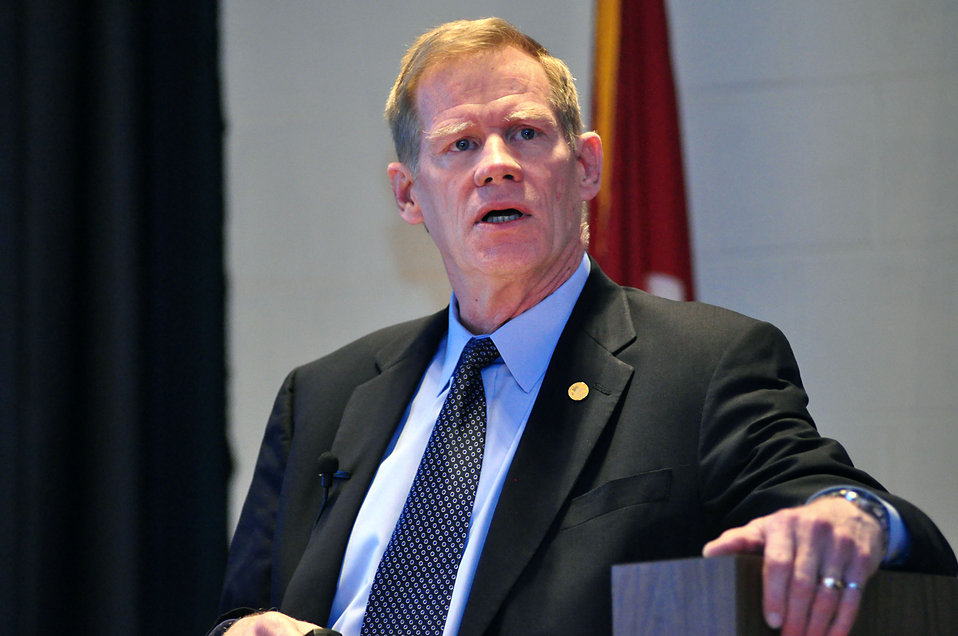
Project Director Carl Strock Oak Ridge Business Safety Partnership UPF 2014 Oak Ridge

14-042 DOE photo Lynn Freeny 4-2-2014 Oak Ridge Tennessee